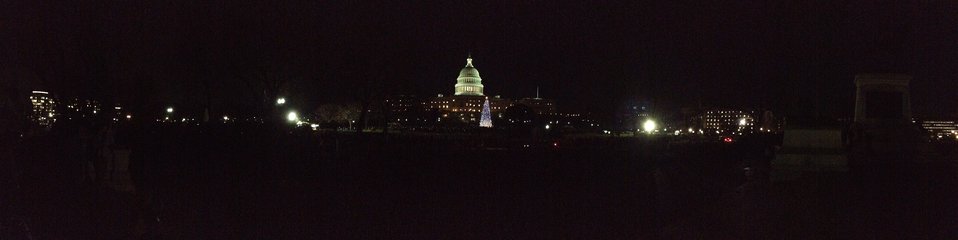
Panorama of U.S. Capitol Ellipse in Washington, D.C., shortly after lights for the Capitol Christmas tree were turned on Tuesday, Dec. 4, 2012.